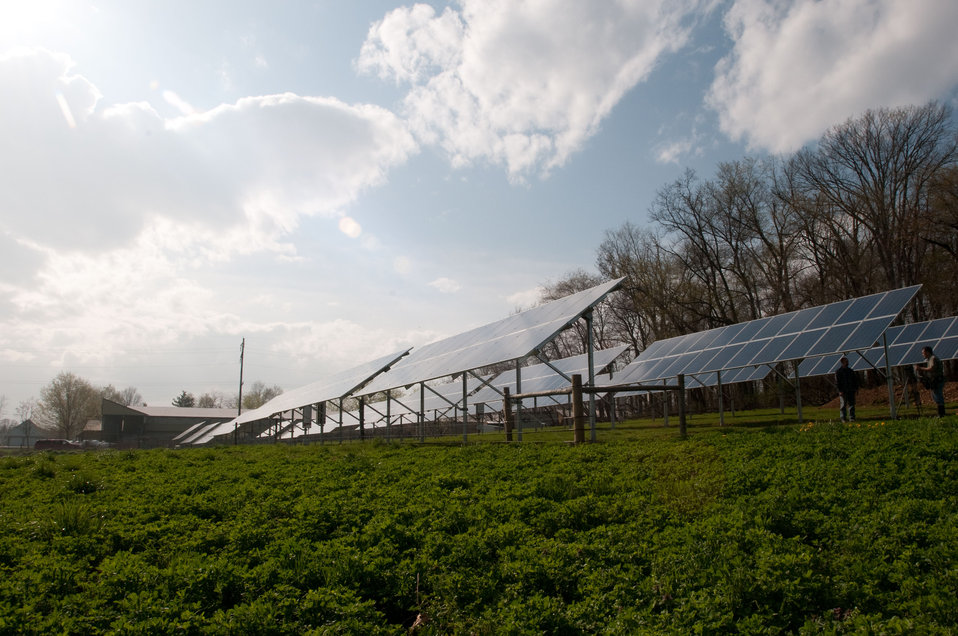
Some of the 240 solar panels at Seldom Rest Farms located, north of Myerstown, PA, on Wednesday, April 20, 2011. The farm maintains a crop, herd of sheep and 17,000 hens. The Hens are kept in a two story chicken house and produce approximately 2.5 million chicks each year. To supplement their electrical needs, they chose a contractor who knew about United States Department of Agriculture (USDA) Rural Energy for America program (REAP) grants and helped them through the application process. The farm was awarded a $152,000 grant (25% of the cost). to install the 1001kW solar array to power their farm, a neighboring farm and homes on the local electrical grid. The 240 solar panels were ground mounted with 5-foot clearance underneath to allow sheep to graze and rest underneath protected from the rain, sun or snow fall. 10 converters change the DC electrical energy from the panels into AC energy that goes into the local power grid. Spring statistics show it is producing more than expected. REAP offers grants and/or loan guarantees for the purchase and installation of renewable energy generating systems and for energy efficiency improvements.